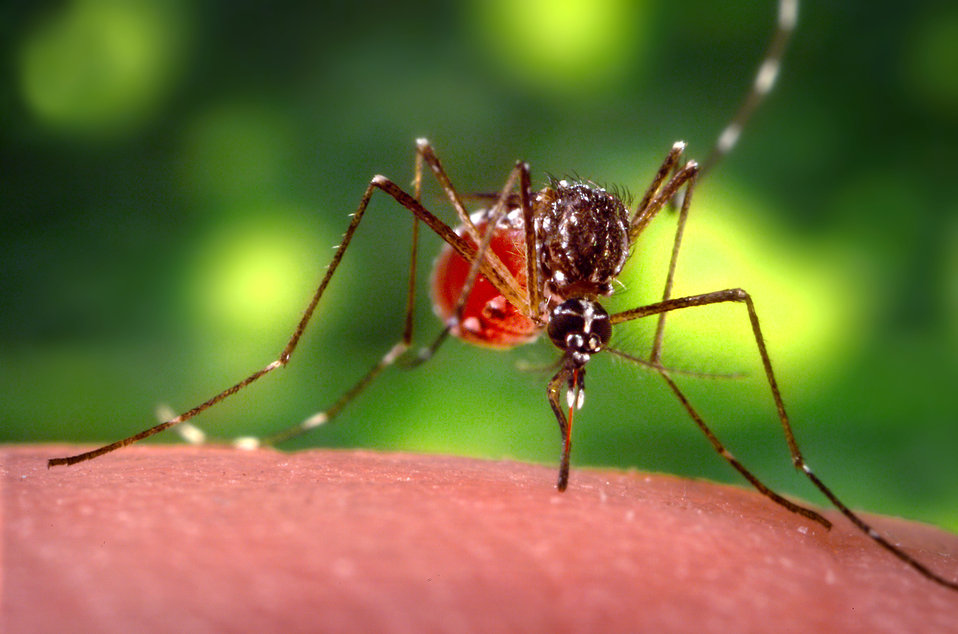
This 2006 image depicted a female Aedes aegypti mosquito as she was obtaining a blood-meal from a human host through her fascicle, which after penetrating the host's skin, has reddened in color, reflecting the blood's coloration through this tubular structure. In this case, what would normally be an unsuspecting host was actually the CDC's biomedical photographer's own hand, which he'd offered to the hungry mosquito so that she'd alight, and be photographed while feeding. As it filled with blood, the abdomen became distended, stretching the exterior exoskeletal surface, thereby, causing it to become transparent, allowing the collecting blood to become visible as an enlarging intra-abdominal red mass.